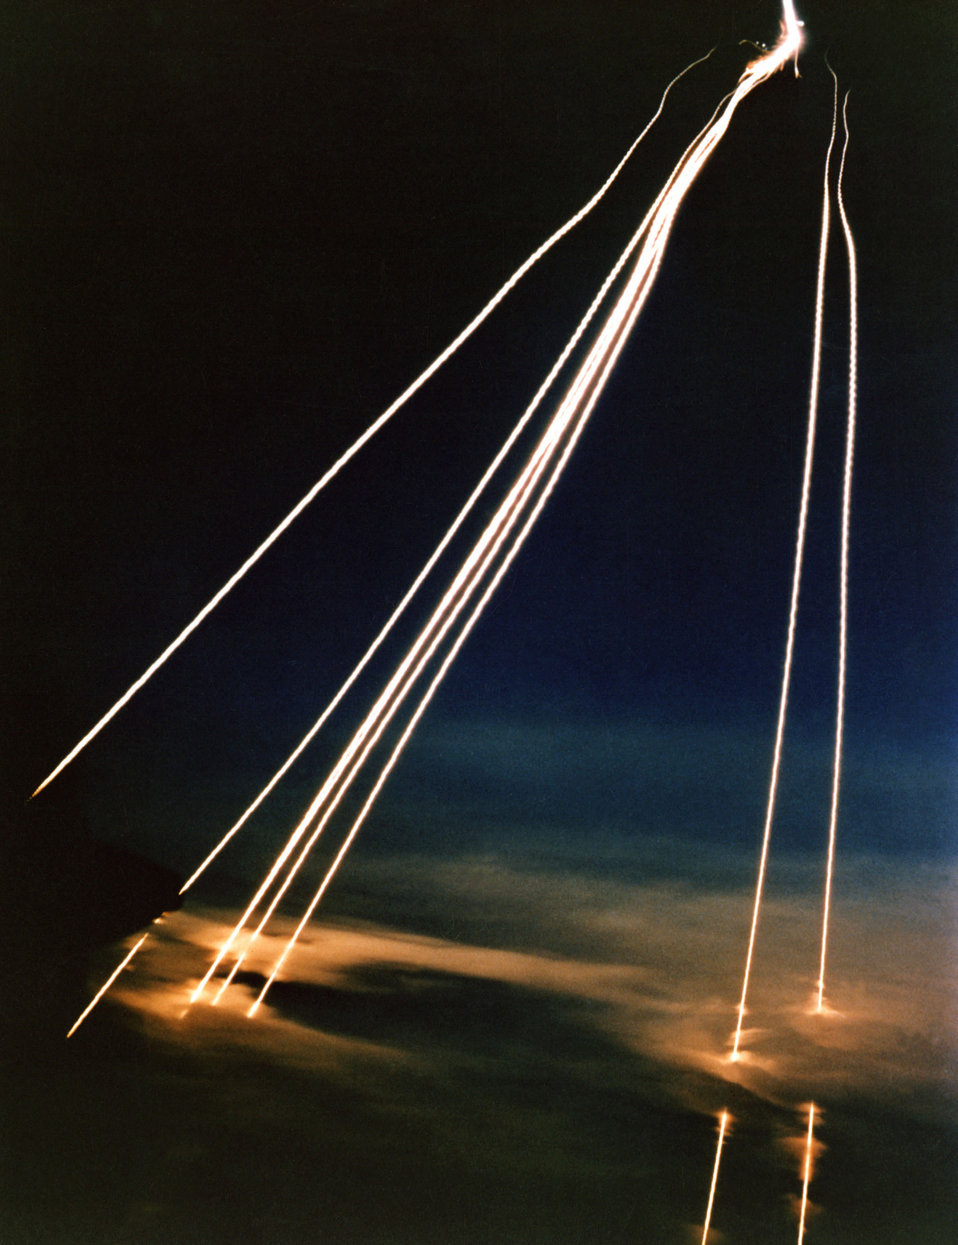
Peacekeepers

FILE PHOTO -- A time exposure of eight Peacekeeper (LGM-118A) intercontinental ballistic missile reentry vehicles passing through clouds while approaching an open-ocean impact zone during a flight test.